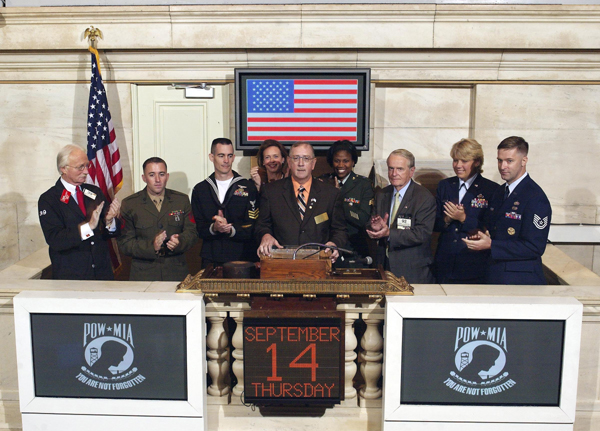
Stock Exchange honors POW/MIAs

William Frampton (center), senior liaison officer with the U.S. Air Force Missing Persons Branch, rings the closing bell at the New York Stock Exchange on Sept. 14. With Mr. Frampton are (left to right) John Erik Smith, exchange sergeant at arms; Marine Cpl. Robert Beck; Petty Officer 1st Class Darren Rodriguez; Catherine Kinney, president and co-chief operating officer for the exchange; Army Sgt. Melanie Moore; James McGuire, an exchange trader and a Korean War veteran; Master Sgt. Susan Williams; and Tech. Sgt. Stephen Wilson. The servicemembers visited the exchange to commemorate National POW/MIA Recognition Day by being present at the ringing the closing bell.